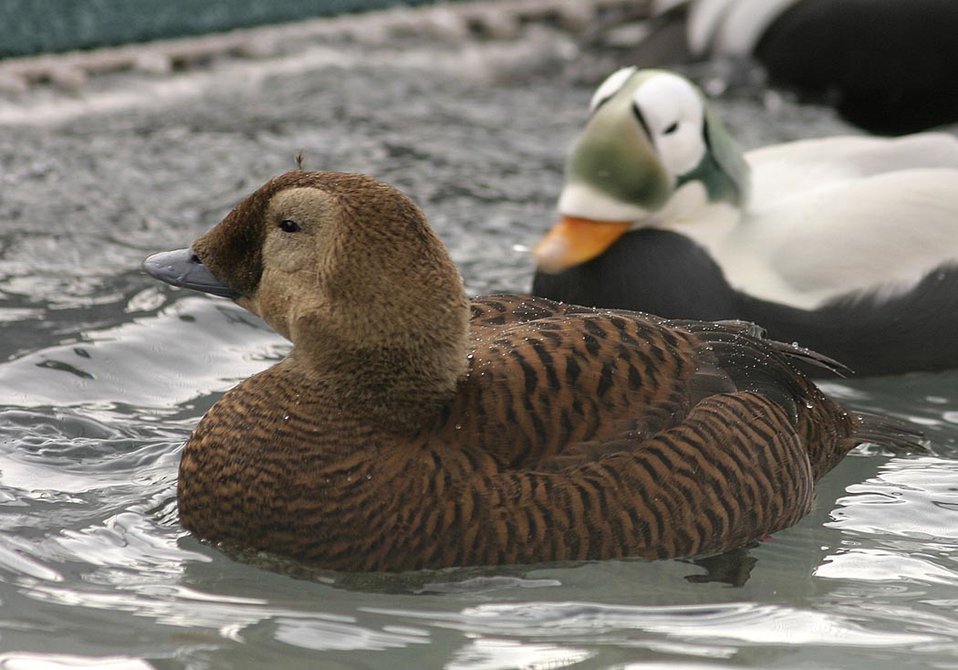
Threatened spectacled eider female and male (Somateria fischeri), Alaska SeaLife Center, Seward, Alaska